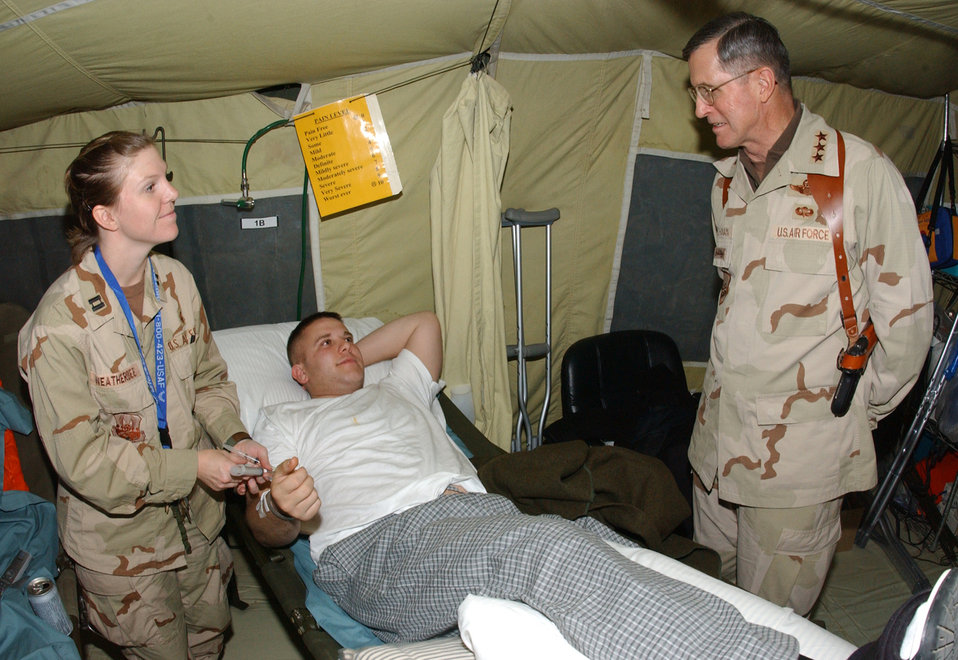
Lackland medics support OIF evacuation mission

BALAD AIR BASE, Iraq -- Lt. Gen. Walter E. Buchanan III talks with Capt. Tamra Weatherbee and Army Pfc. Matt Baugh at the contingency aeromedical staging facility here Jan. 16. The general commands 9th Air Force and U.S. Central Command Air Forces and he stopped by the facility to visit staff and patients during a short visit to Balad. Captain Weatherbee is a staff nurse deployed from the 859th Medical Operations Squadron at Lackland Air Force Base, Texas. Private Baugh is a member of the Army's 15th Infantry Division deployed from Fort Lewis, Wash.